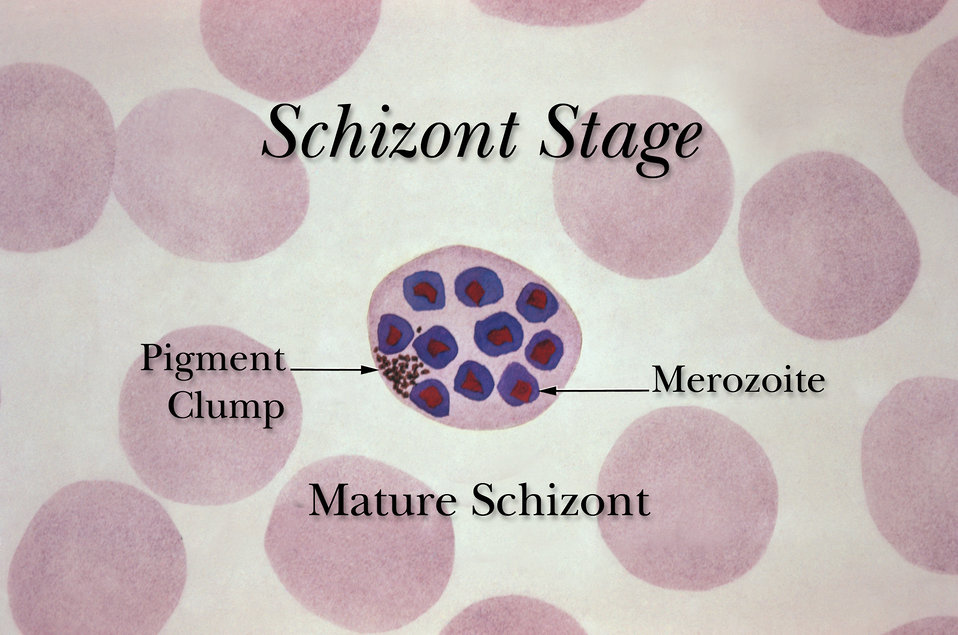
A mature erythrocytic schizont during the Plasmodium spp. life cycle.